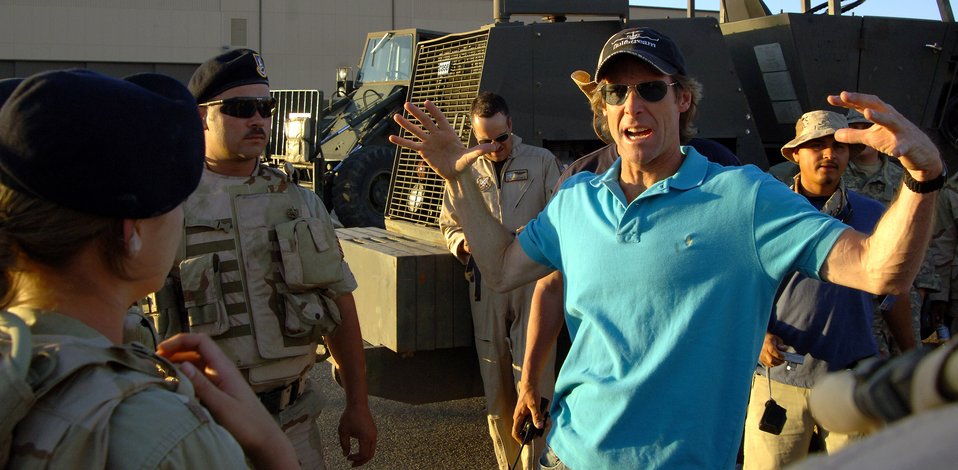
Movie project transforms Holloman

Movie director Michael Bay instructs Airmen filling the roles of extras on the set of the movie